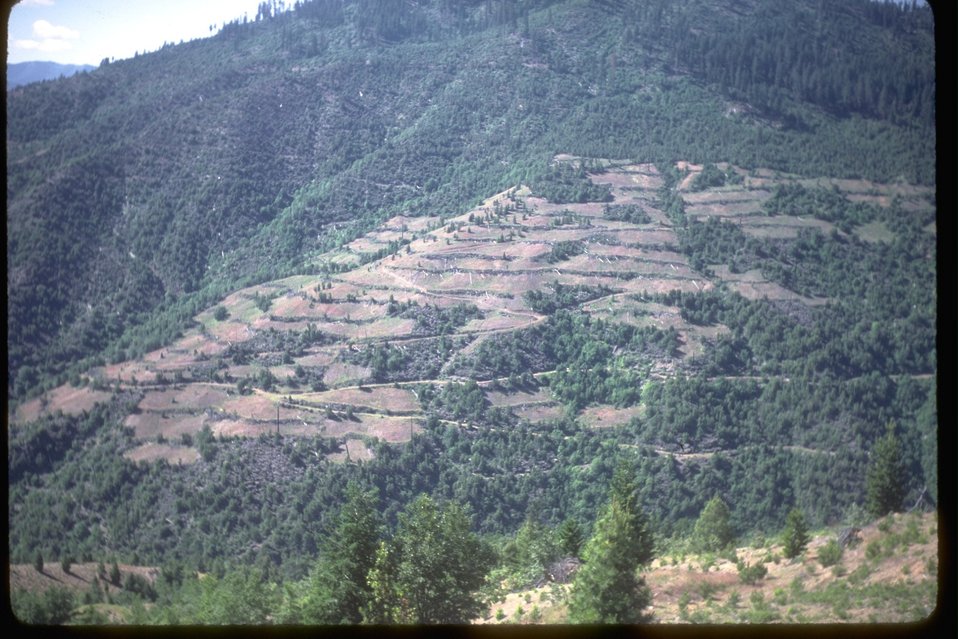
Brushfield Conversion scarification project with planted trees and benching.